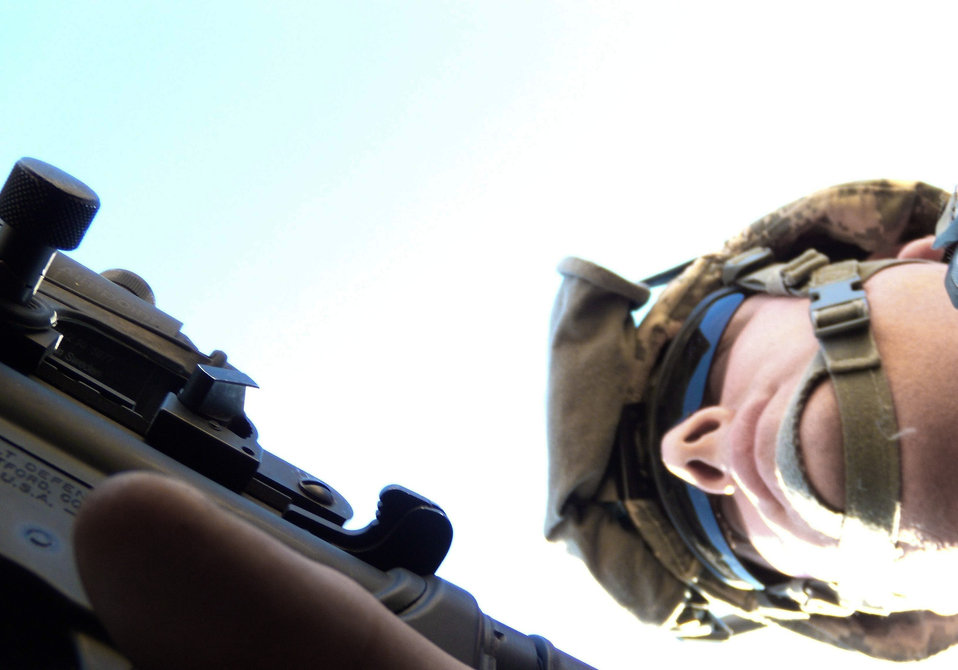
Battlefield detectives fight with fingerprints

Master Sgt. James Melman scans the horizon for improvised explosive devices during Combat Skills Training Jan. 20 at Fort Hood, Texas. Sergeant Melman is a member of the Weapons Intelligence Team currently in Iraq.